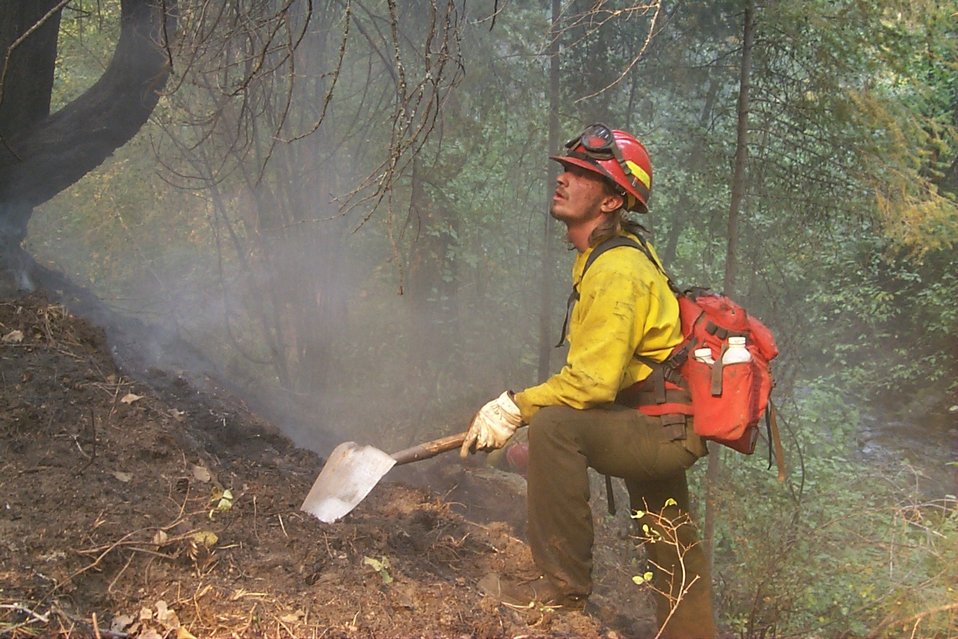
Line crew Fire Clearwater Fire Salmon Field Office USRD Upper Snake River District